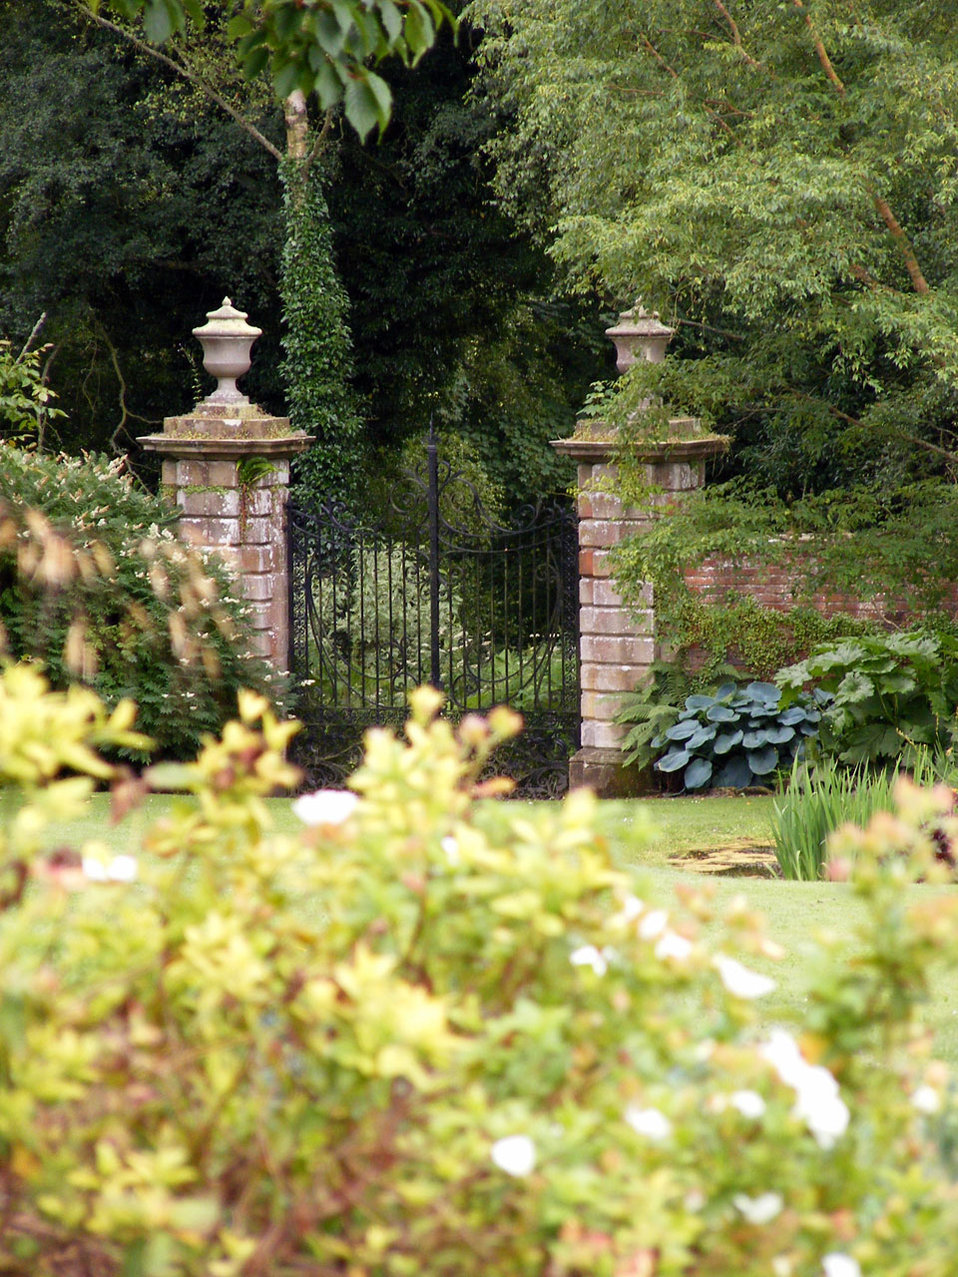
Gates of a walled garden.